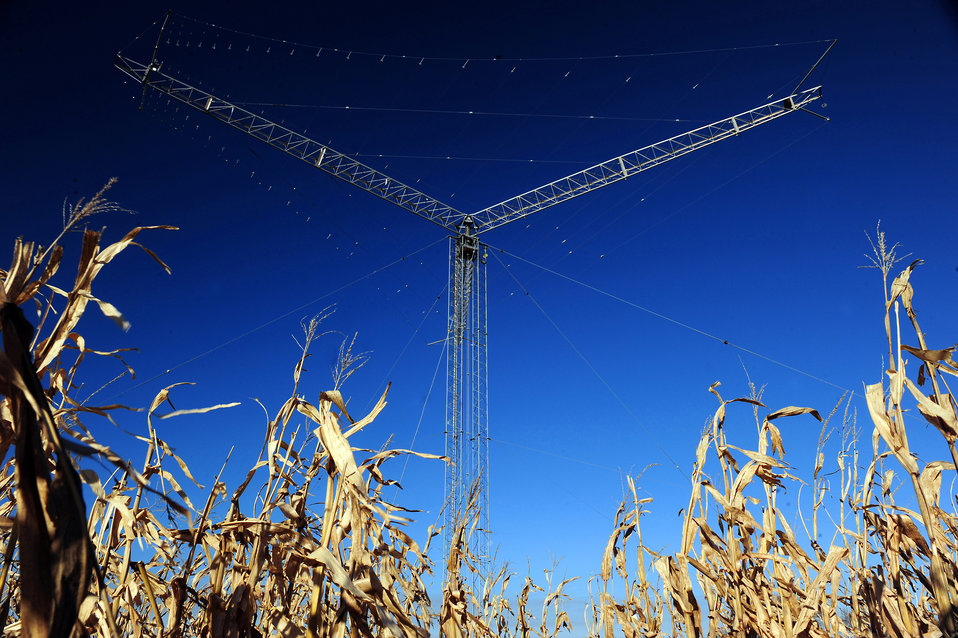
Rural communications site has global mission

One of eight directional rotatable log periodic antennas stands tall behind a cornfield, Nov. 5, 2009, near Elkhorn, Neb. The directional rotatable log periodic antennas can rotate 360 degrees. A crew of telecommunications specialists maintained by the 55th Strategic Communications Squadron from Offutt Air Force Base, Neb., monitor the antennas, which support a wide variety of missions from executive levels of government to NASA.